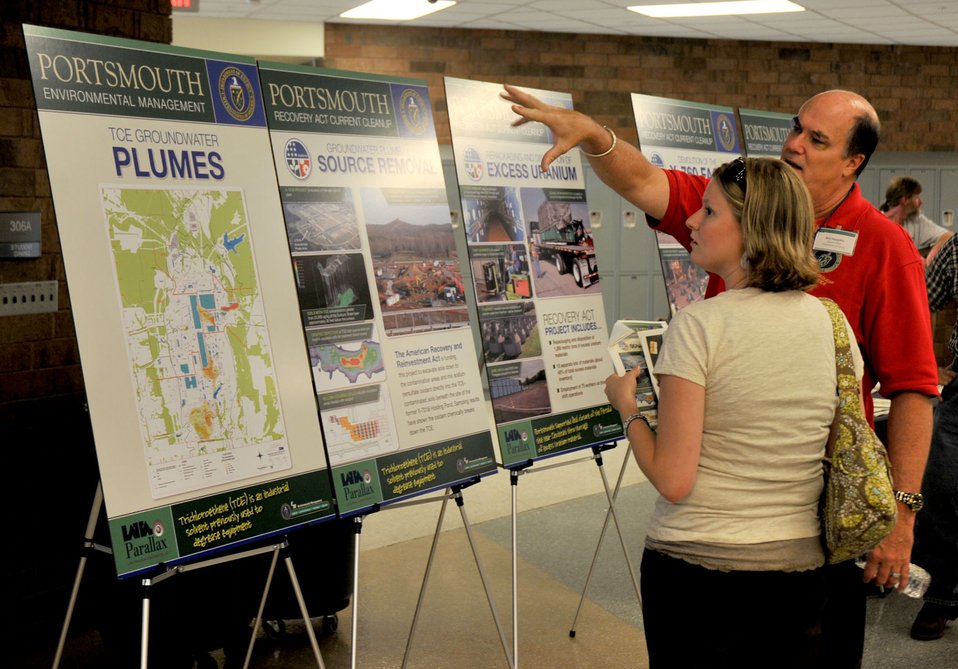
Paducah poster session

Portsmouth/Paducah Project Office Manager Bill Murphie discusses the progress on several cleanup projects at the Portsmouth Gaseous Diffusion Plant with Chillicothe Gazette reporter Loren Genson during a June 18, 2010 informational poster session.